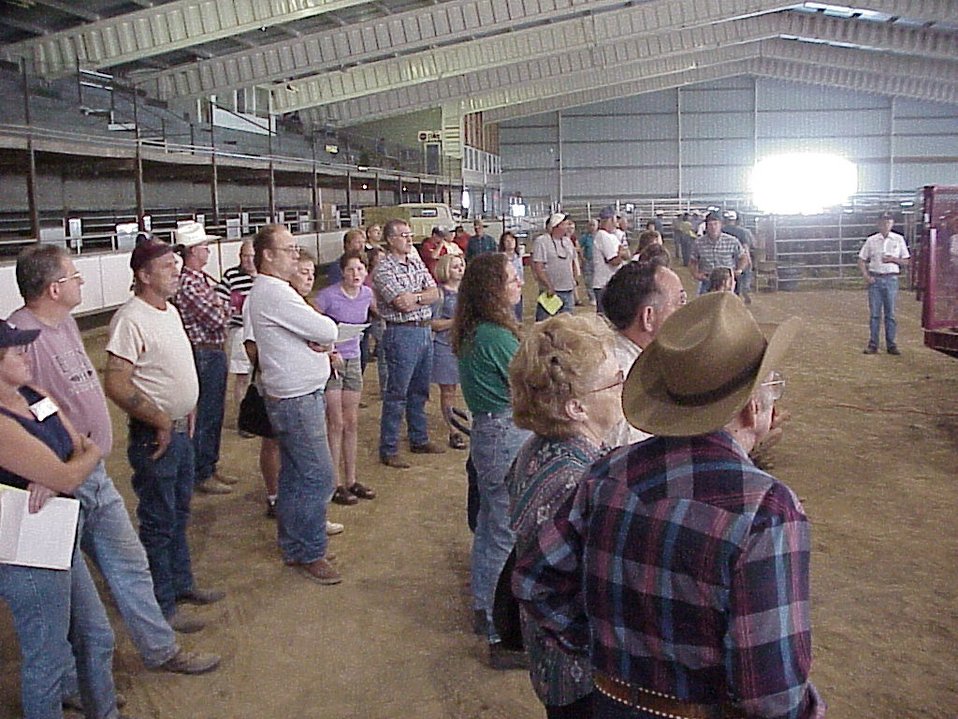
Lewiston Wild Horse and Burro Adoption Program Auction WHB indoor auction Cottonwood Field Office UCSC Upper Columbia Salmon Clearwater District